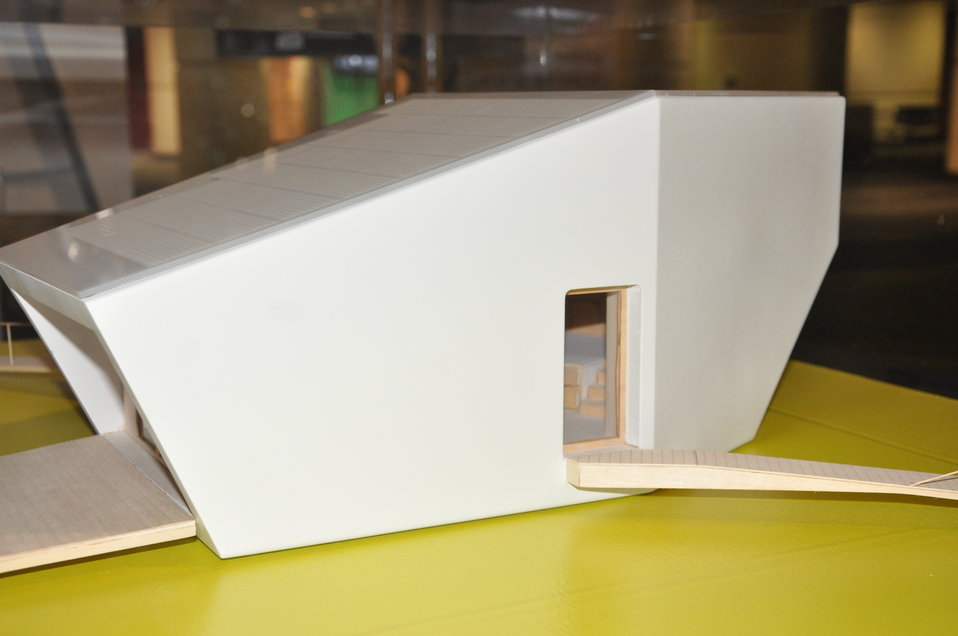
Cal Tech